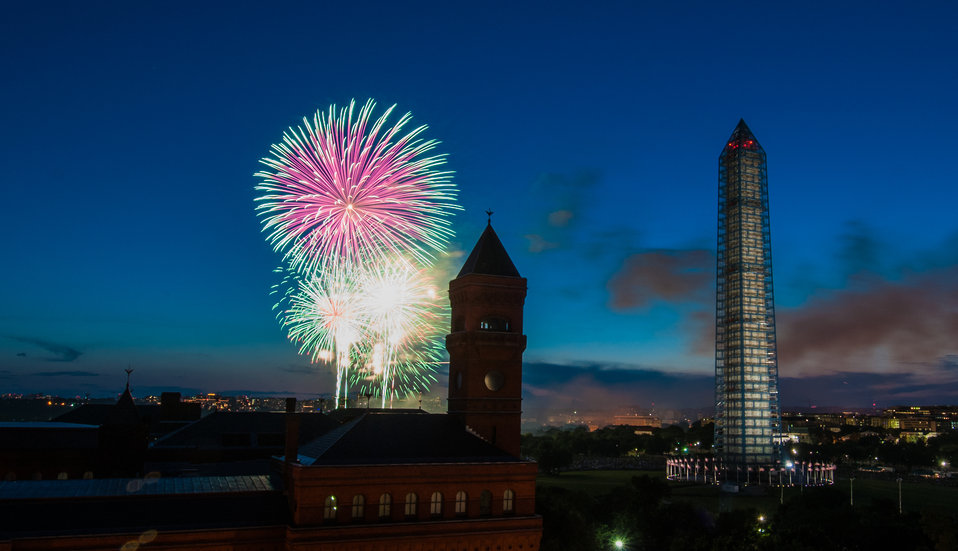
4th of July fireworks as seen from the U.S. Department of Agriculture (USDA) headquarters building, with the USDA Forest Service Yates Building in the foreground, left, and the Washington Monument in Washington, D.C., on July 4, 2013.